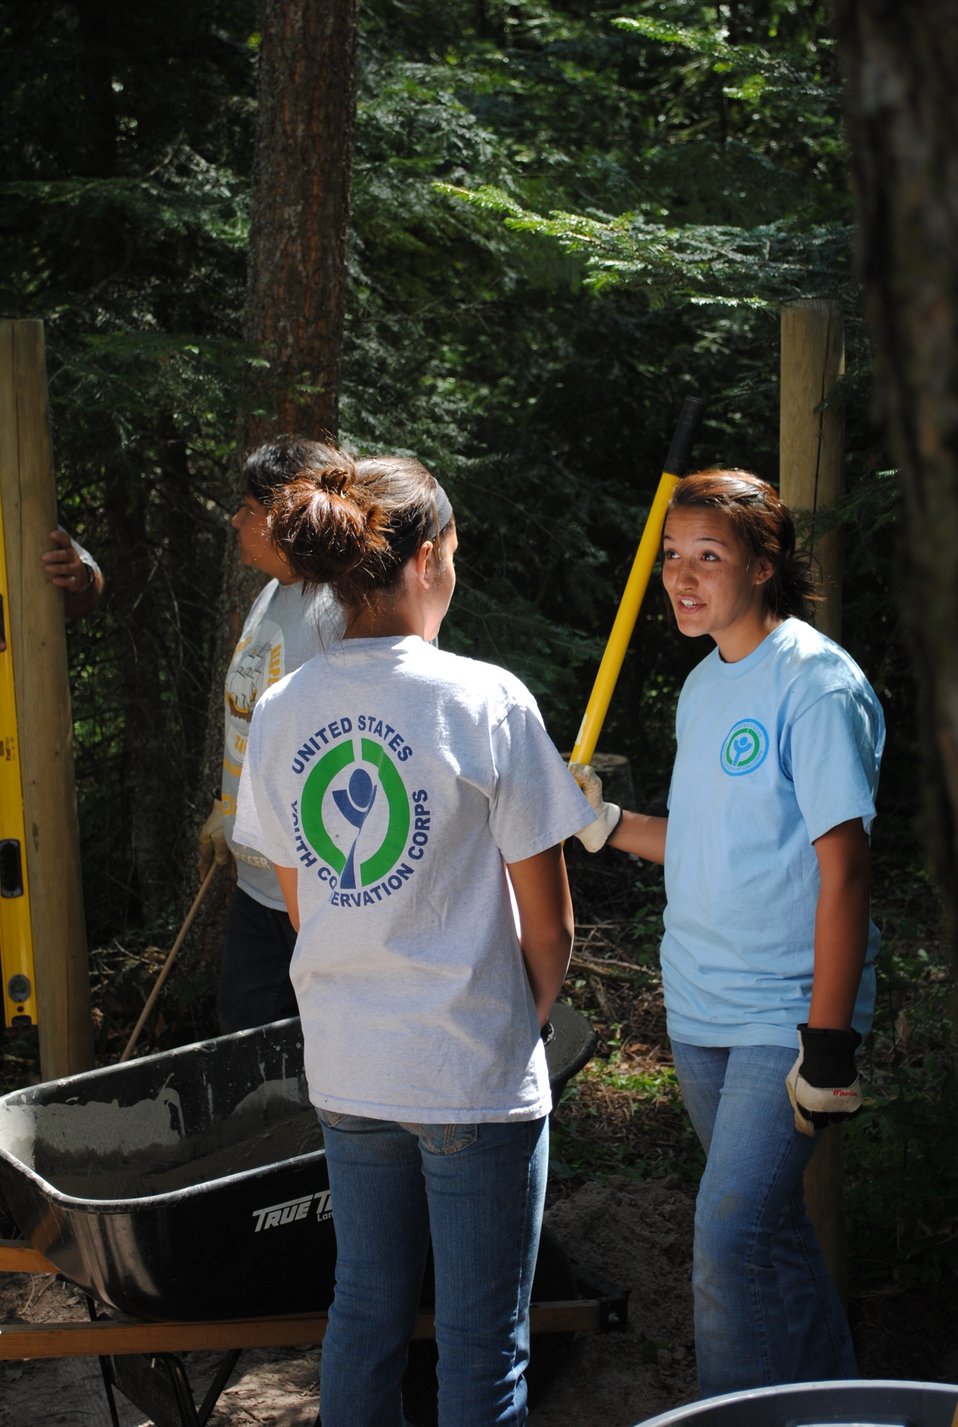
Creston National Fish Hatchery Outdoor Classroom Project

Montana Tribal Youth Conservation Corps
Nature Explore Outdoor Classroom Project

Monica Cleaveland speaking with Stephanie McDonald.

Evie Bradley/USFWS